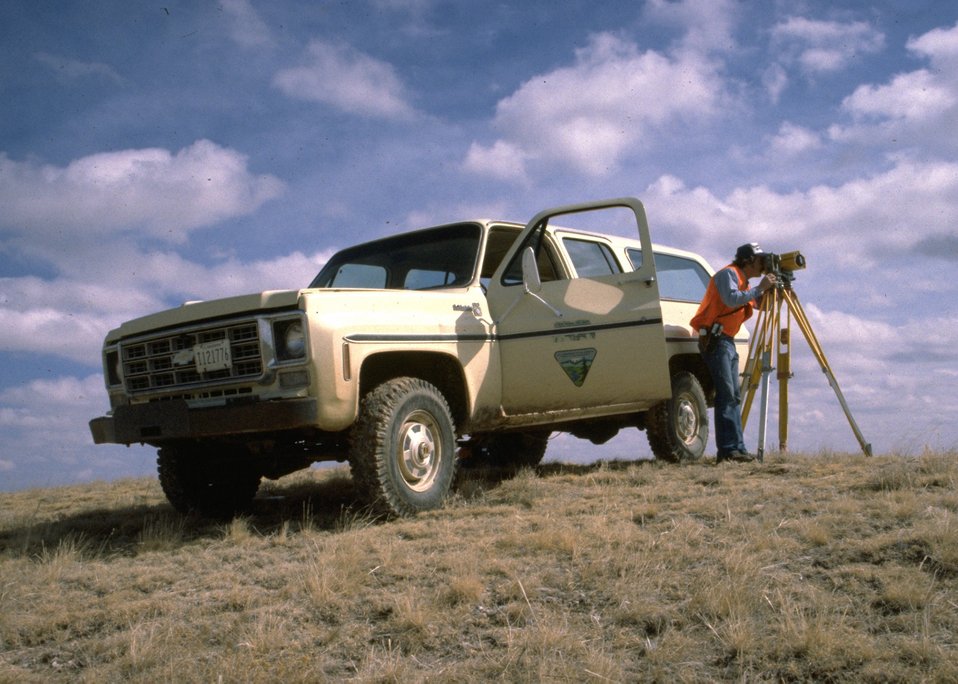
Surveying an unknown area.